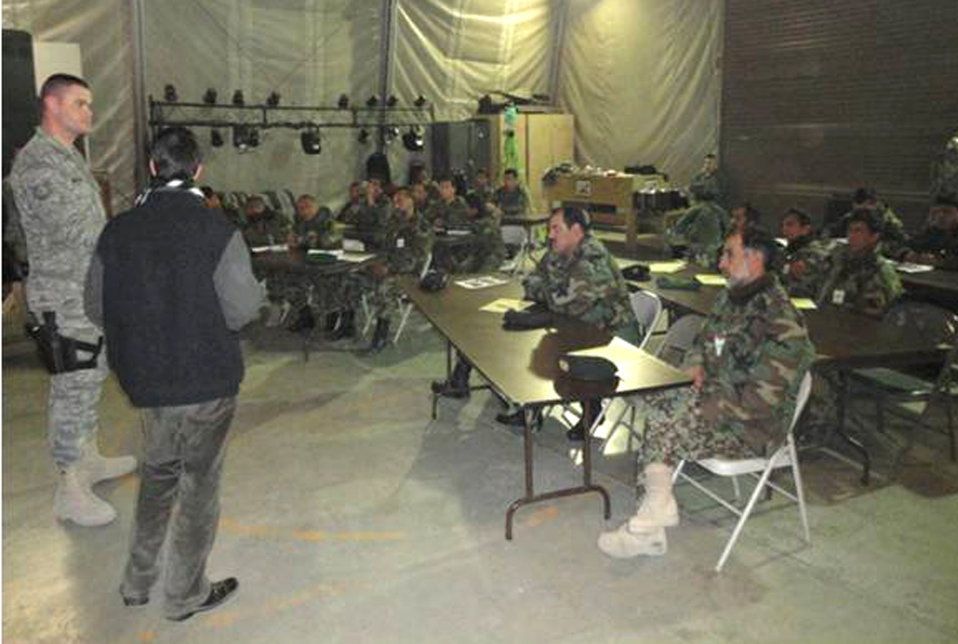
Fingerprint training

Tech. Sgt. Jarrod Williford teaches crime scene training to the 21 members of the Afghan National Army Criminal Investigation Command Jan. 3, 2011, at Camp Eggers, Afghanistan. Sergeant Williford is with the Camp Eggers Provost Marshal's Office.